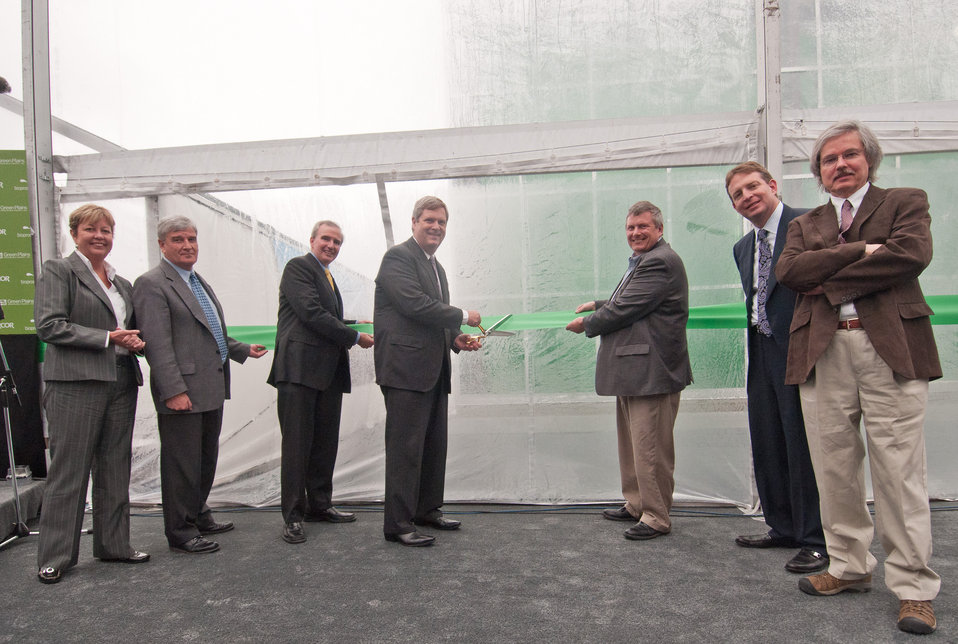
Agriculture Secretary Tom Vilsack (center left) cuts the ribbon during the Grand Opening ceremony of Phase II of the BioProcess Algae facility at Green Plains Renewable Energy (GPRE), Inc. on Friday, Apr. 15, 2011 in Shenandoah, IA. Phase II is key component in the commercial scale photo bioreactors/harvesters. The operation is co-located within GPRE’s ethanol factory where BioProcess Algae technology is used to treat waste products; carbon dioxide, recycled heat and water to mass-produce algae. Algae from this facility are used for animal feeds, pharmaceutical and beauty products.